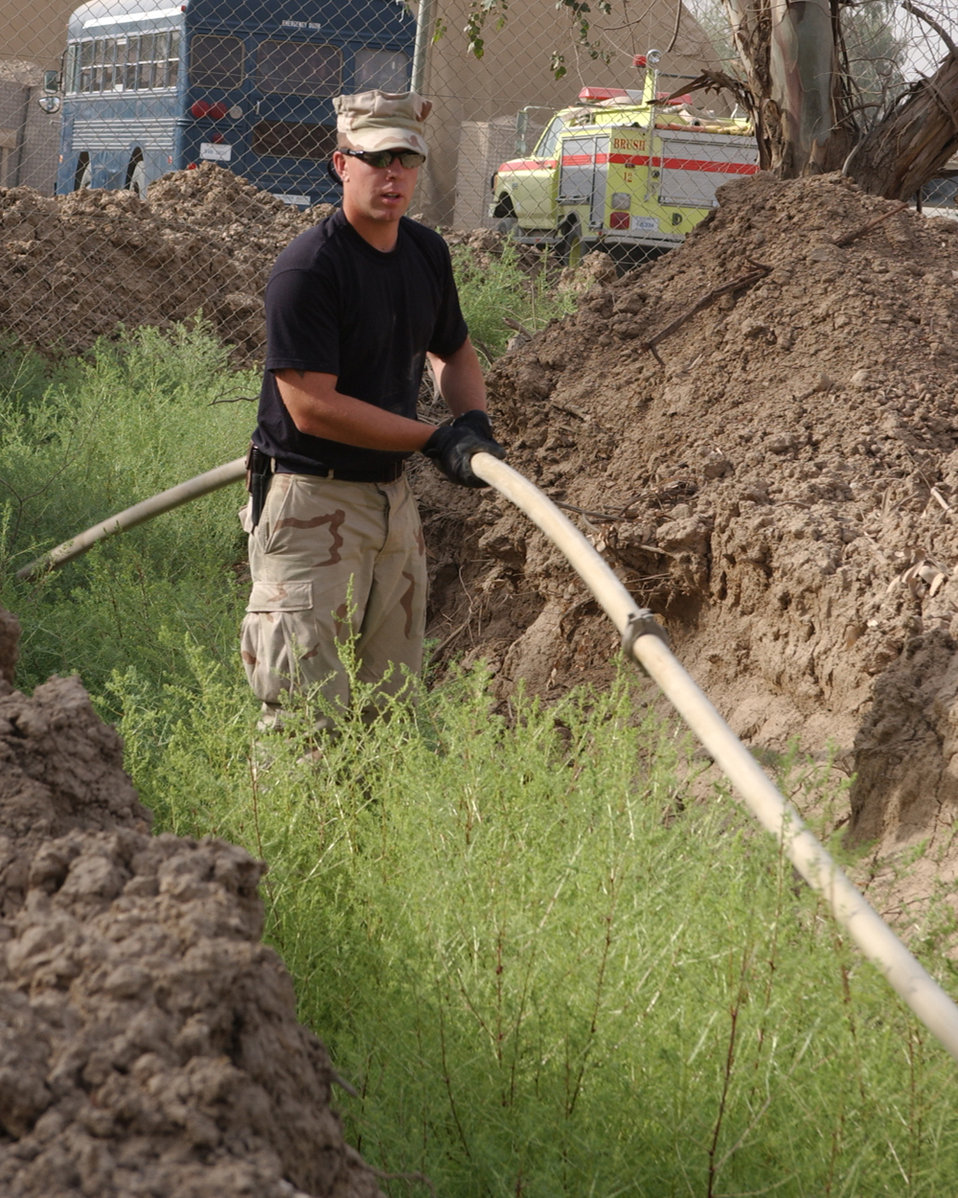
Deployed plumbers keep water flowing

BAGHDAD, Iraq -- Staff Sgt. Sam McCray installs a section of a water pipe. More than 5,000 feet of pipe has been laid to bring fresh water to people here. He is assigned to the 447th Expeditionary Civil Engineer Squadron and is deployed from Kadena Air Base, Japan.